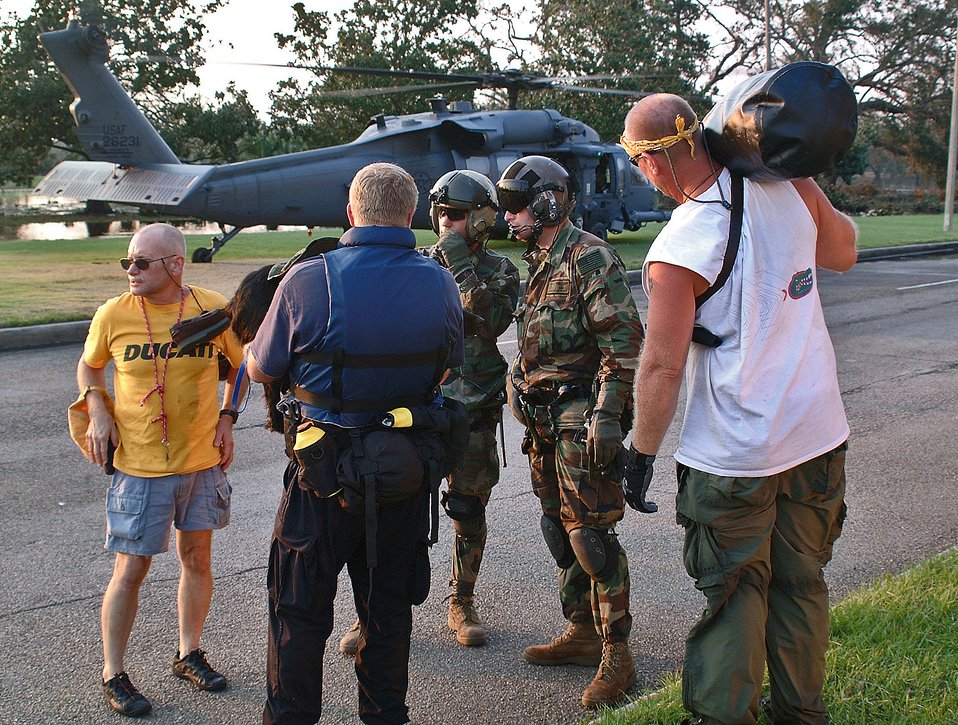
Rescue operations

NEW ORLEANS -- Trained to rescue downed pilots and military troops in combat behind enemy lines, the Air Force's rescue teams are a very small community of highly elite professionals. Flying missions into the flooded city of New Orleans, the rescue forces are working around the clock and have saved more than 2,000 people in five days.